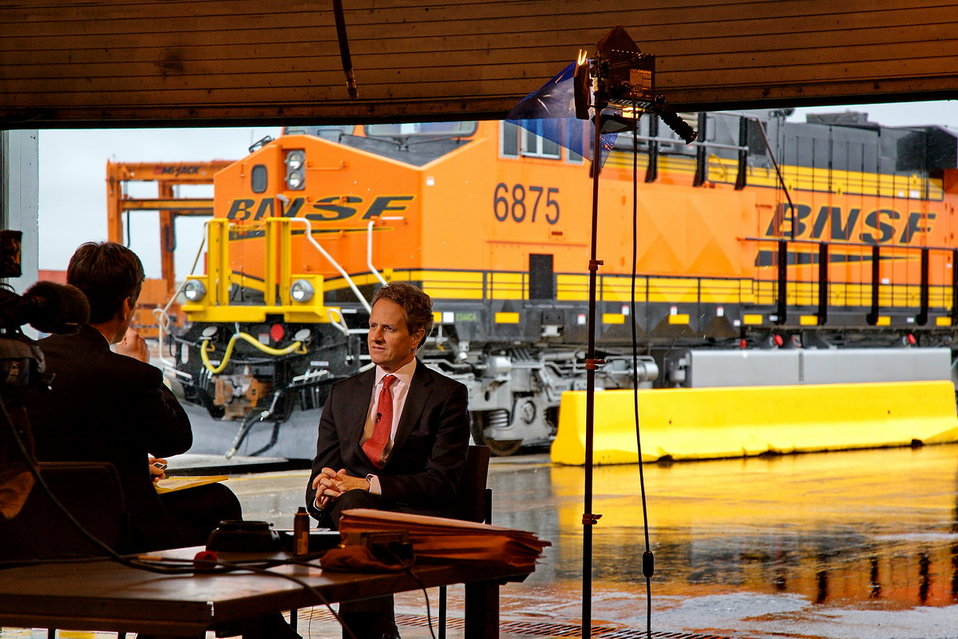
Secretary Geithner Visits BNSF Railway Dallas-Fort Worth, TX

After touring BNSF's Alliance Intermodal Facility in North Fort Worth, Treasury Secretary Tim Geithner sat for an interview with PBS Nightly Business Report's Darren Gersh.